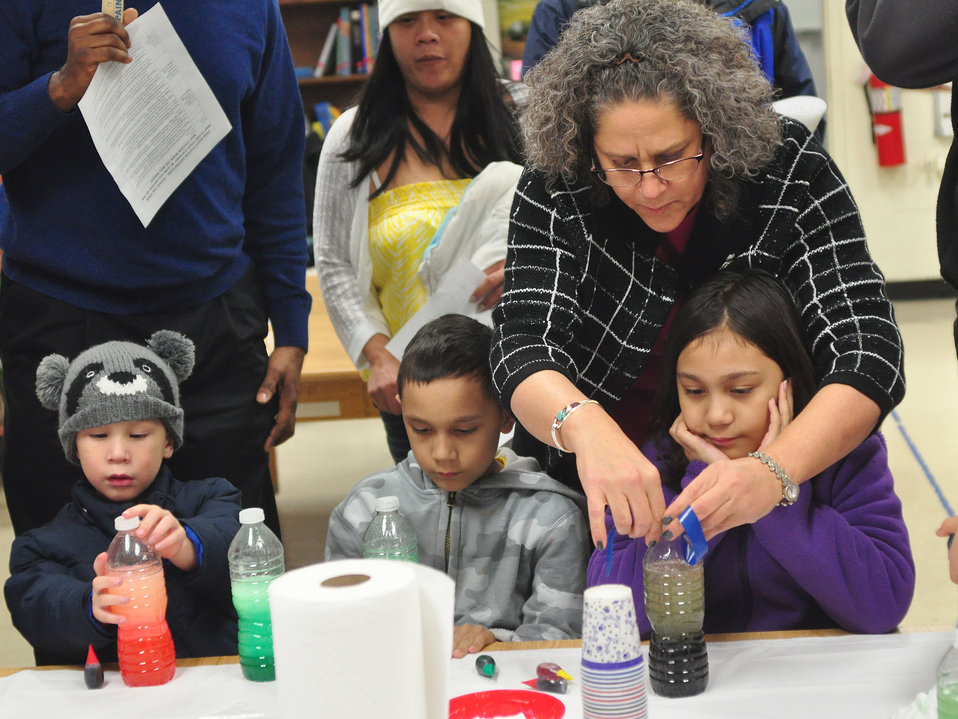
Woodland School STEM Night Oak Ridge 2014

14-013 DOE photo Lynn Freeny 1-23-2014 Oak Ridge Tennessee